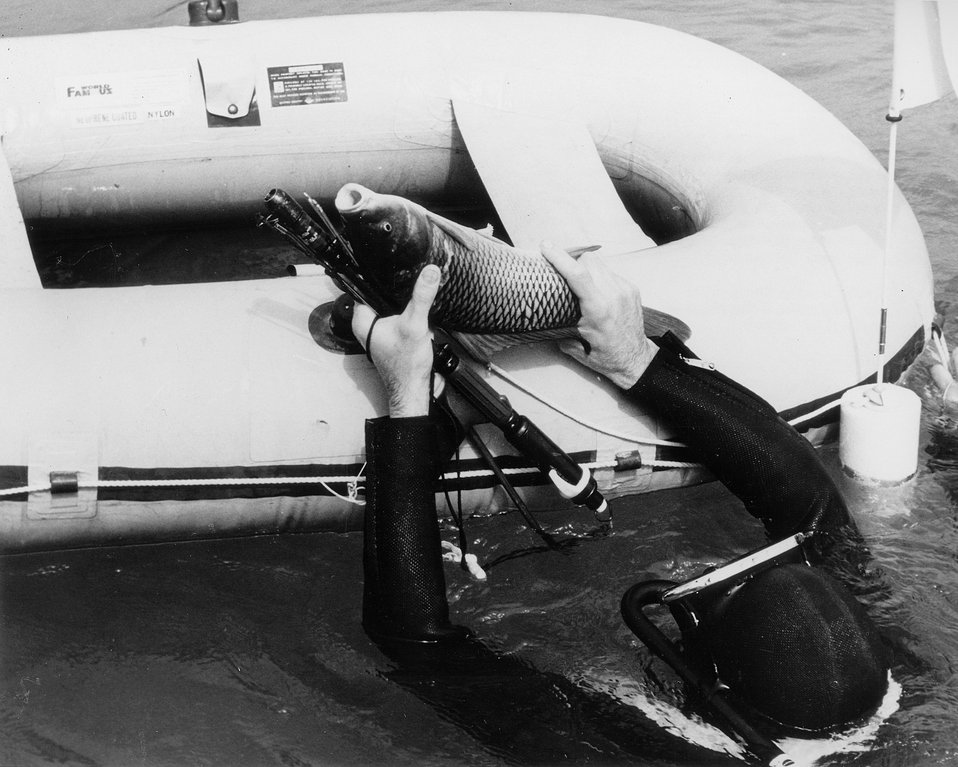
A researcher from Argonne uses a speargun to collect fish samples from the thermal plume of a power plant. c. 1972